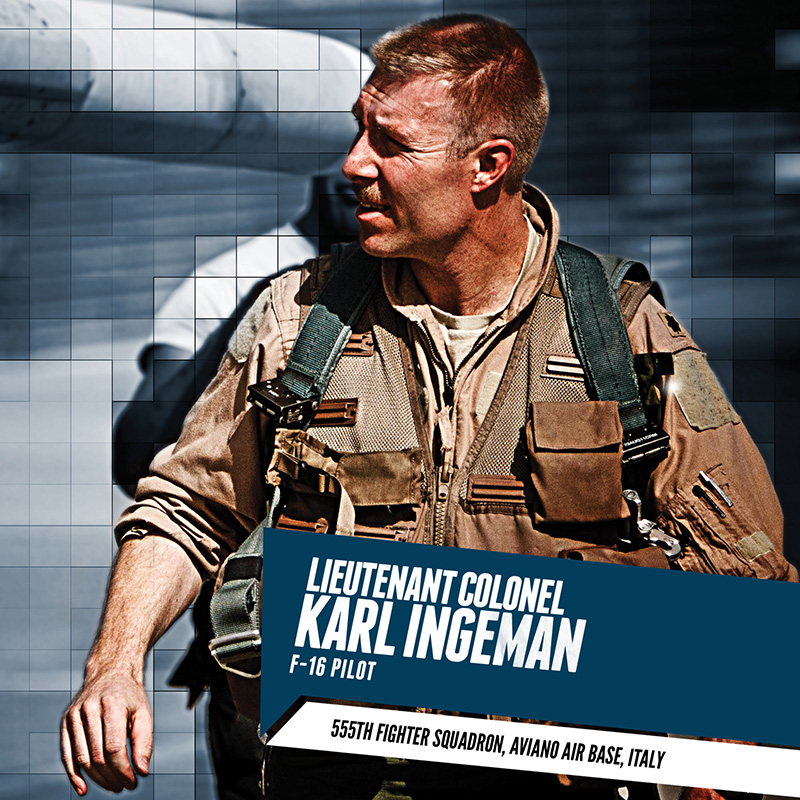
Portraits in Courage

Lt. Col. Karl Ingeman is one of 20 Airmen profiled in the 2012 edition of